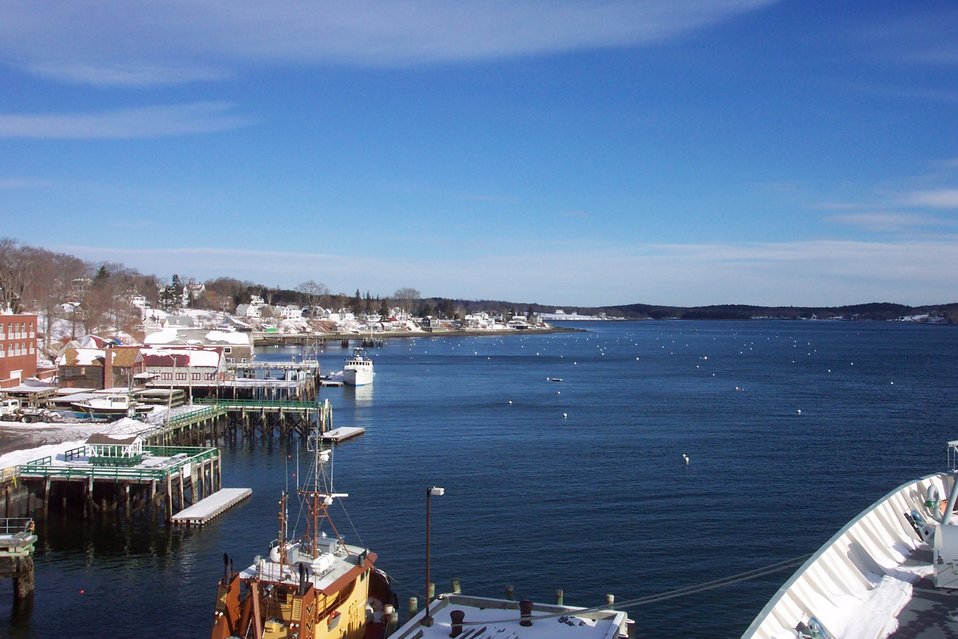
Looking east along the Castine shoreline.